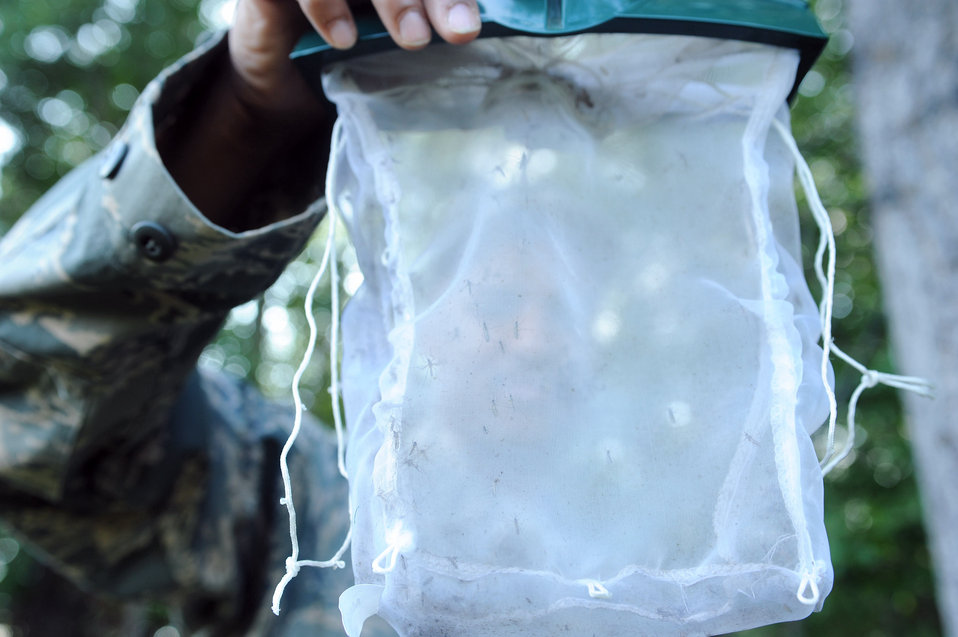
Eielson NCO bugs mosquitos

Tech. Sgt. Christopher Beach holds up a trap filled with mosuitoes caught in the base housing area Aug. 14. Sergeant Beach has 20 strategically-placed mosquito magnets around the base to capture, identify, count and send mosquitoes to be tested for diseases. Last year, he caught more than 3 million mosquitoes. He is assigned to the 354th Civil Engineer Squadron entomology shop.